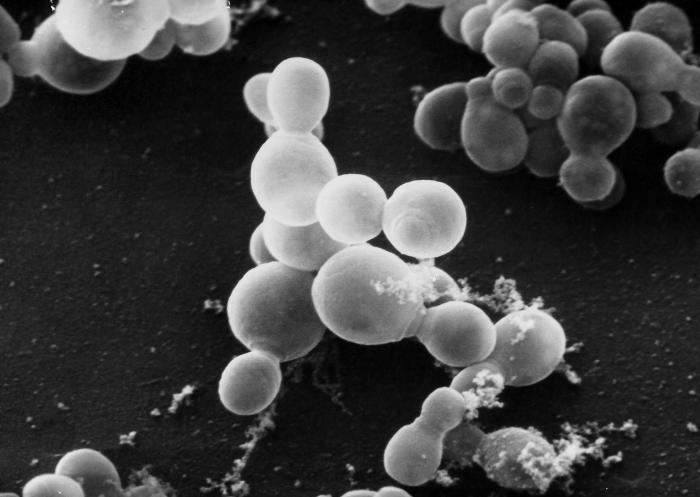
Scanning electron micrograph (SEM) of Malassezia furfur.